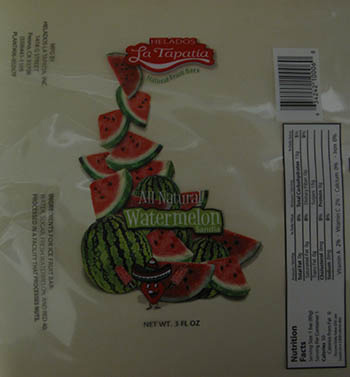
RECALLED – Ice cream products

March 19, 2014 – Product Recall – Helados La Tapatia, Inc. Recalls Products Because of Possible Health Risk.